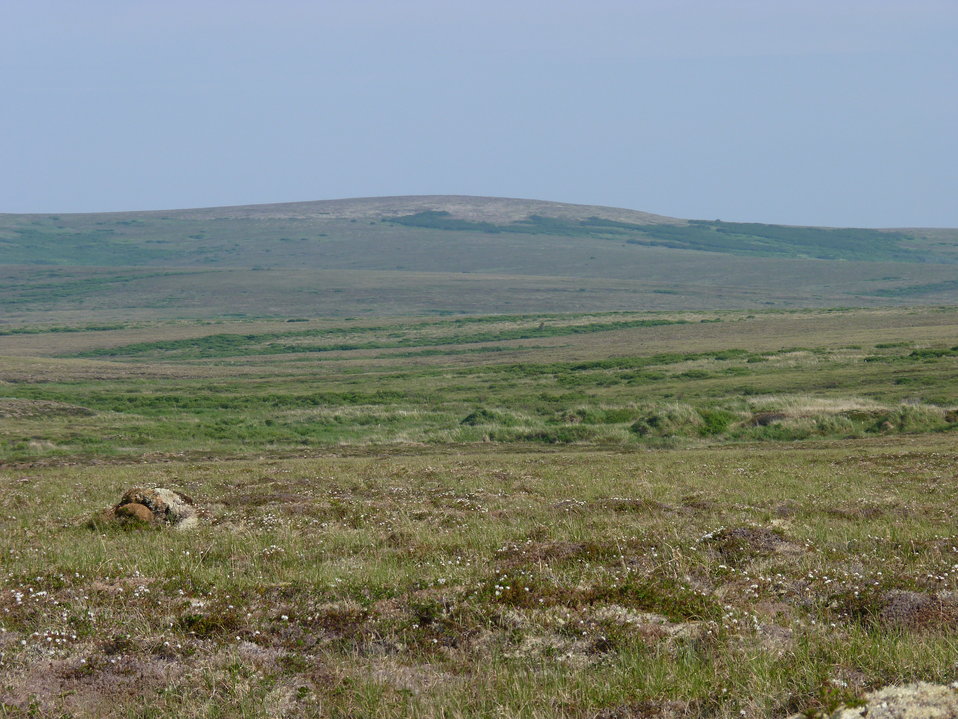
Andreafsky Wilderness, Yukon Delta National Wildlife Refuge